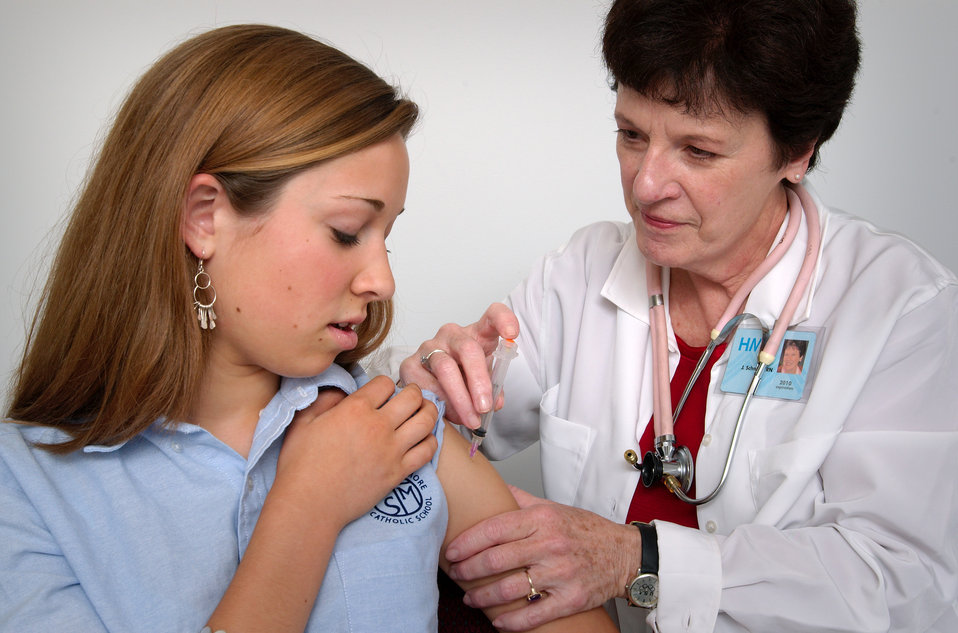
This 2006 image depicted an adolescent female in the process of receiving an intramuscular immunization in her left shoulder muscle, from a qualified nurse. The girl was assisting in the procedure by holding up her sleeve, while watching as the injection was administered. The nurse was using her free hand to stabilize the injection site.